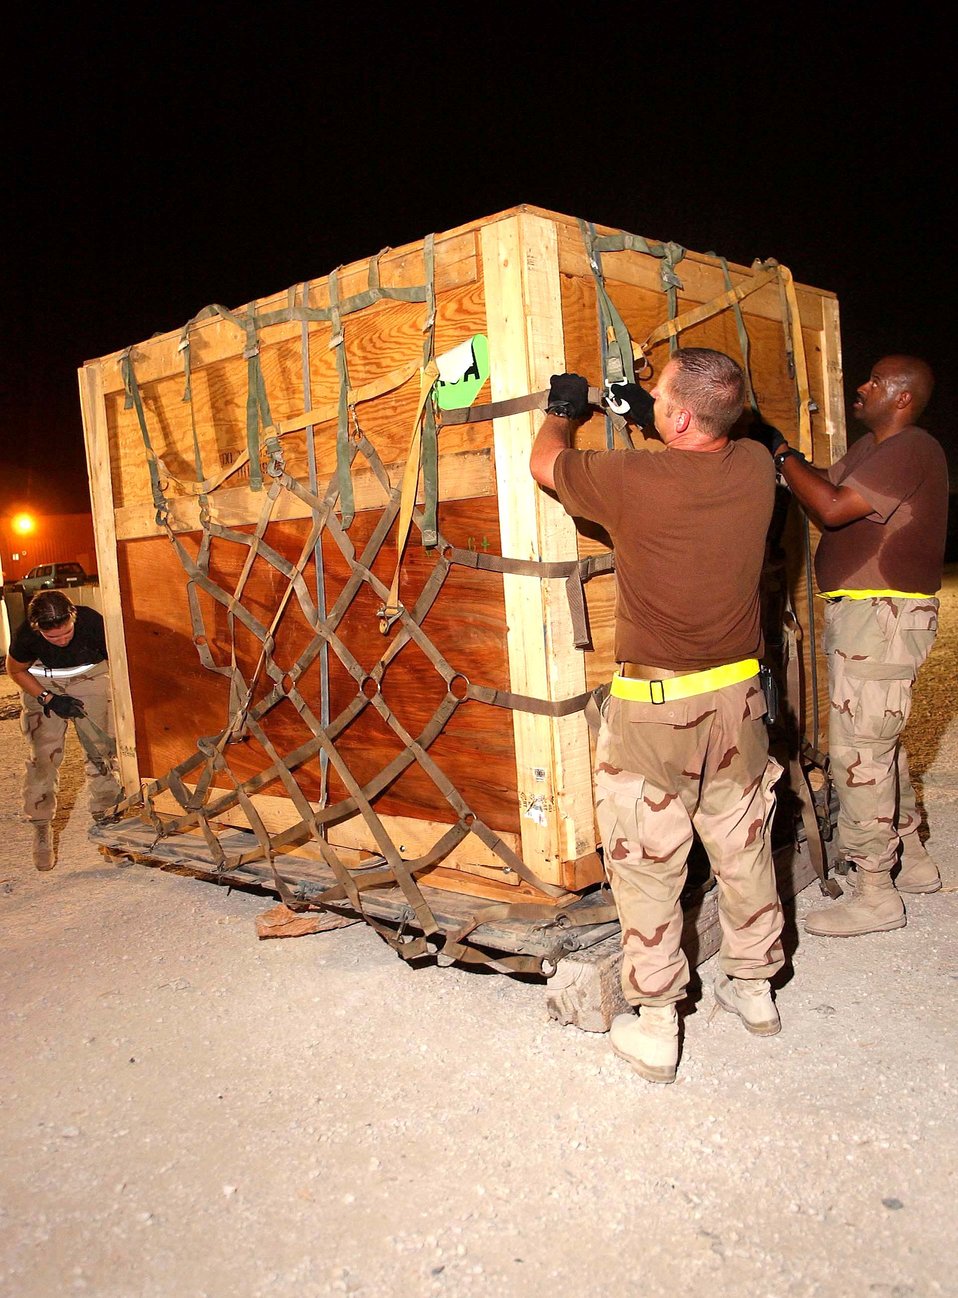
Airmen support Soldiers, Marines with up-armor kits

SOUTHWEST ASIA -- (From left) Staff Sgt. Naomi Groom, Tech. Sgt. Mason McGill and Master Sgt. Antonio Brock secure the latest in the series of 275 up-armor kit pallets July 19 scheduled for shipment to forward-deployed Soldiers and Marines on July 19. Working around-the-clock at a forward-deployed location, 8th Expeditionary Air Mobility Squadron Airmen expect to complete shipment of all pallets in five days.